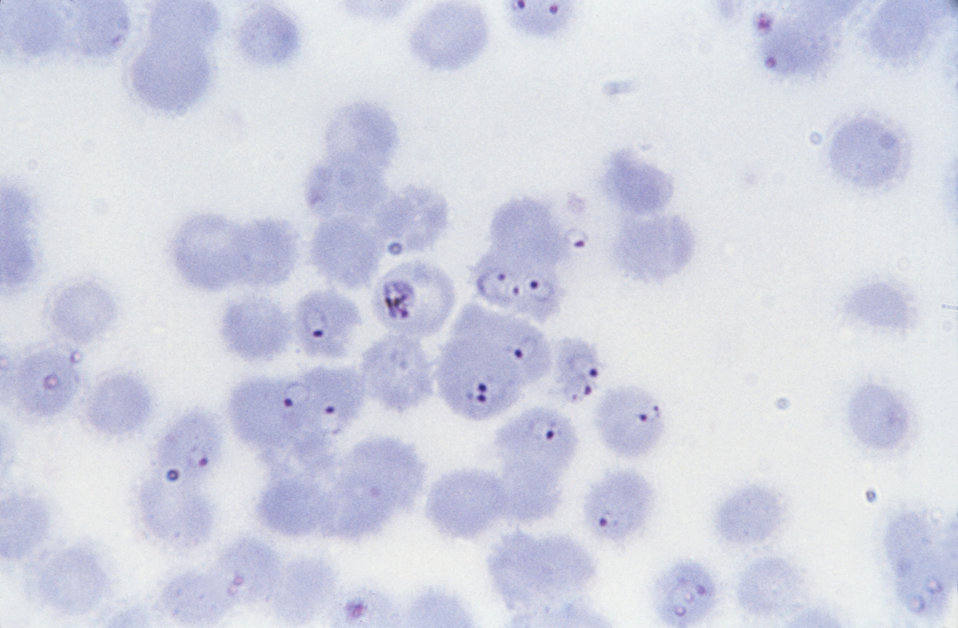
This thin film Giemsa stained micrograph shows intermediate-forms of P. falciparum and an old, growing trophozoite.